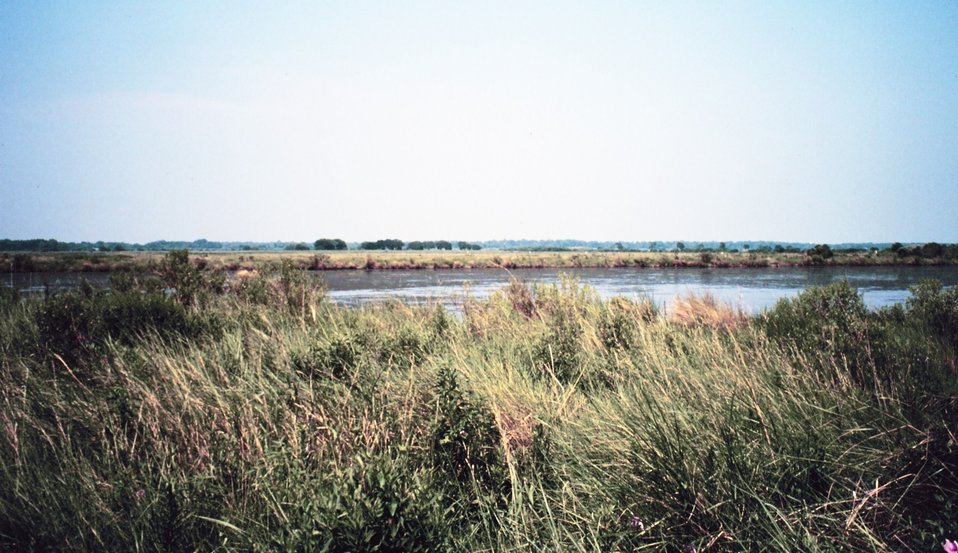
Open pond within mixed vegetation marsh.